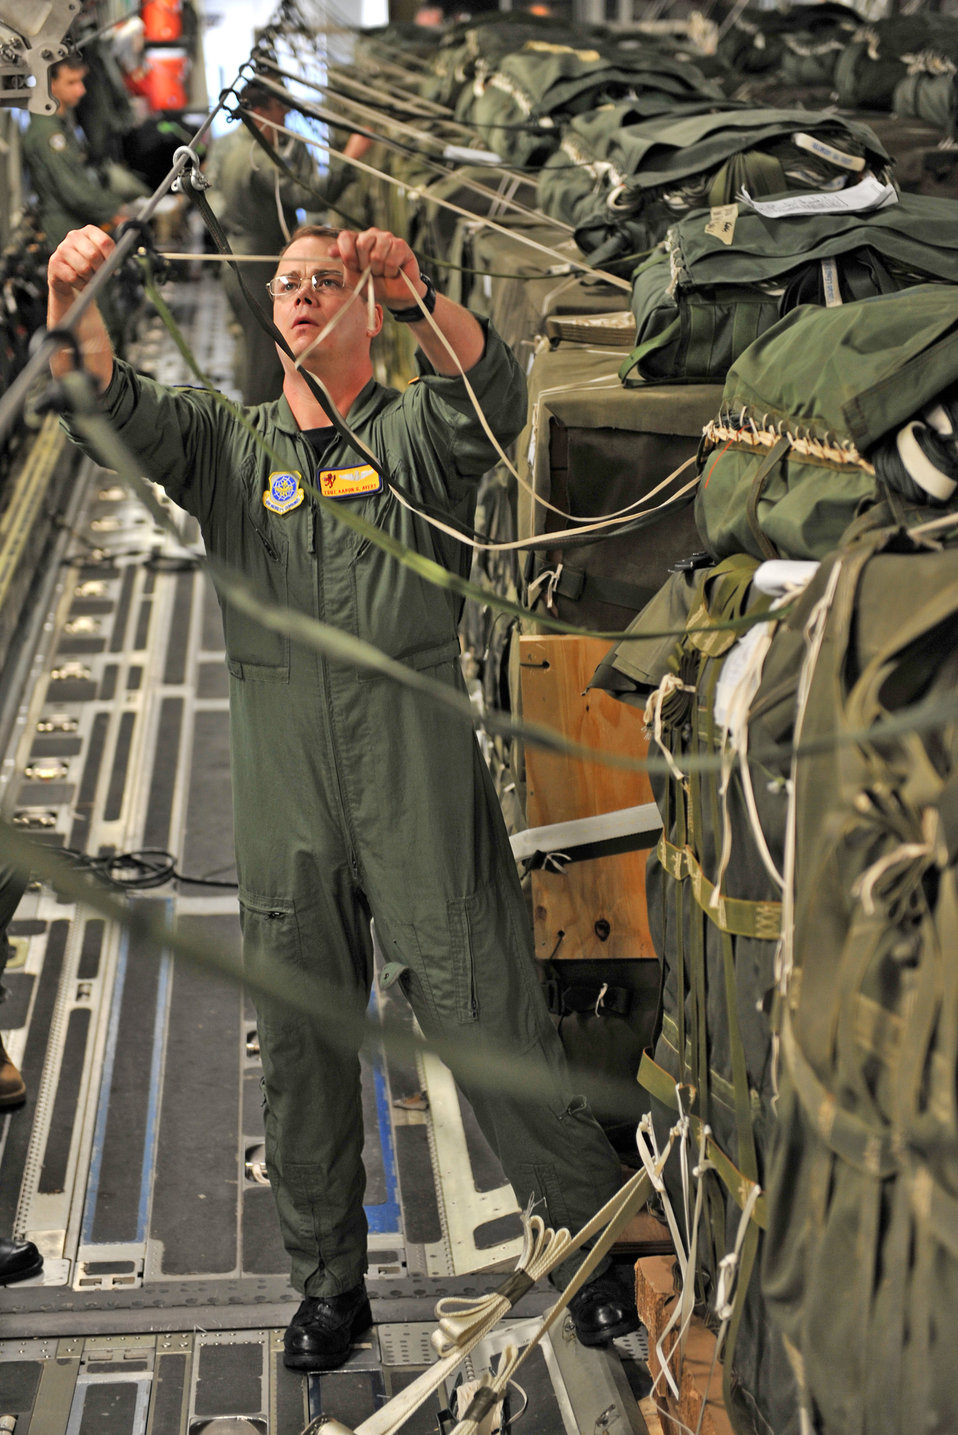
Operation Unified Response

Tech. Sgt. Aaron Avery attaches de-oscillation ties to pallets of relief supplies aboard a C-17 Globemaster III cargo aircraft Jan. 18, 2010, at Pope Air Force Base, N.C., before it takes off for a humanitarian mission to Haiti. Sergeant Avery is a loadmaster from the 16th Airlift Squadron at Charleston Air Force Base, S.C. The C-17 conducted the first humanitarian air delivery mission over Haiti. U.S. Southern Command is deploying assets to Haiti to conduct search and rescue operations, damage assessments and sustained humanitarian assistance and disaster relief operations.